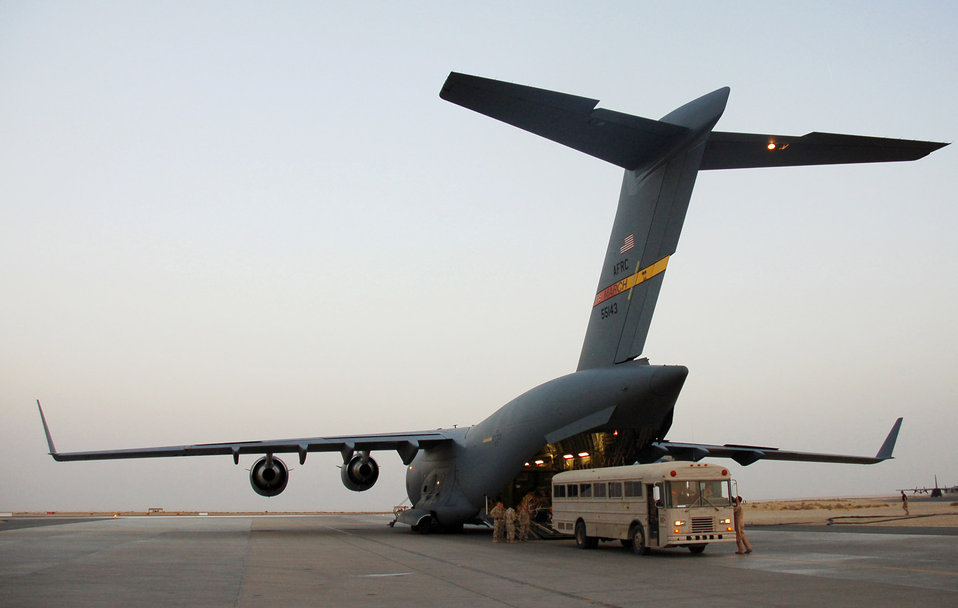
Airpower Summary for July 15, 2007

A med-evac bus backs up to the loading ramp on a C-17 Globemaster III July 1 so Airmen from the 386th Air Expeditionary Wing's Contingency Aeromedical Staging Facility at this Southwest Asia base can transport the patients from the aircraft to the CASF where they will receive care until they can be flown to medical centers in Europe and the continental U.S. for definitive care.